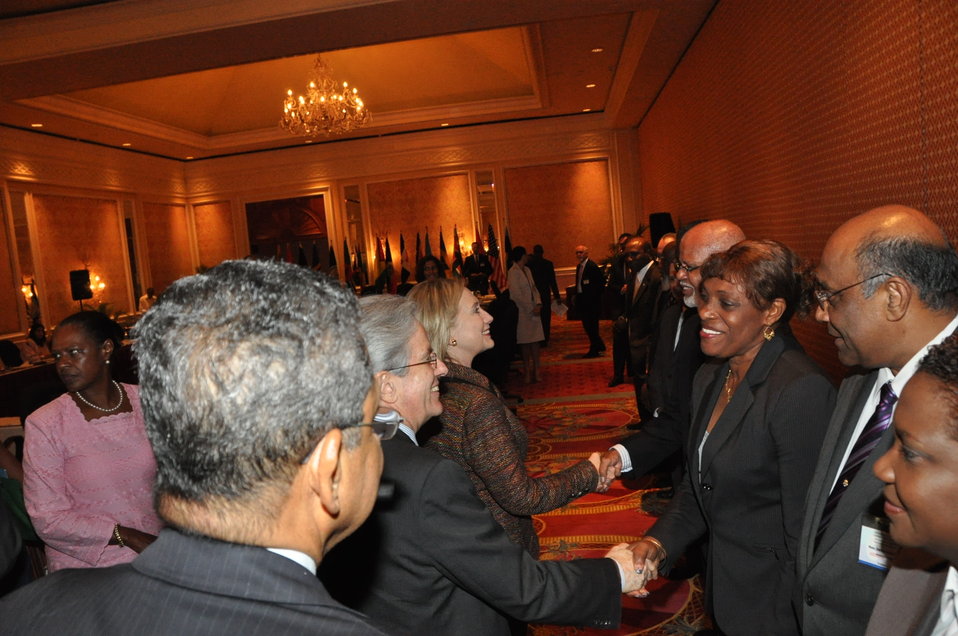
Secretary Clinton Attends a Reception for CARICOM Ministers

U.S. Secretary of State Hillary Rodham Clinton attends a reception for Caribbean Community (CARICOM) foreign ministers in Montego Bay, Jamaica, on June 22, 2011. Jamaican Foreign Minister Kenneth Baugh is pictured on the right.